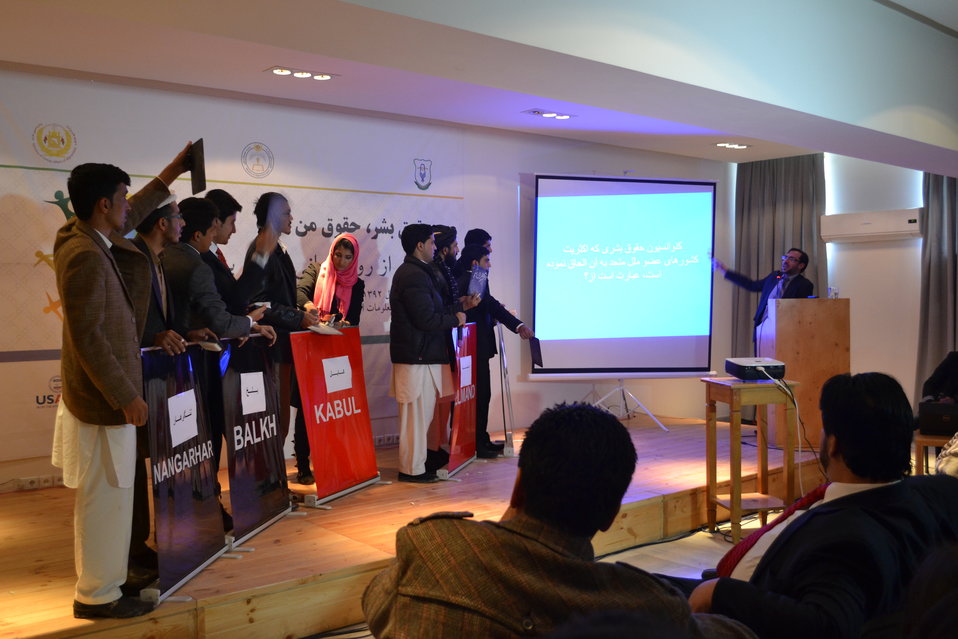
Human Rights Day at the Afghan Center, Kabul University